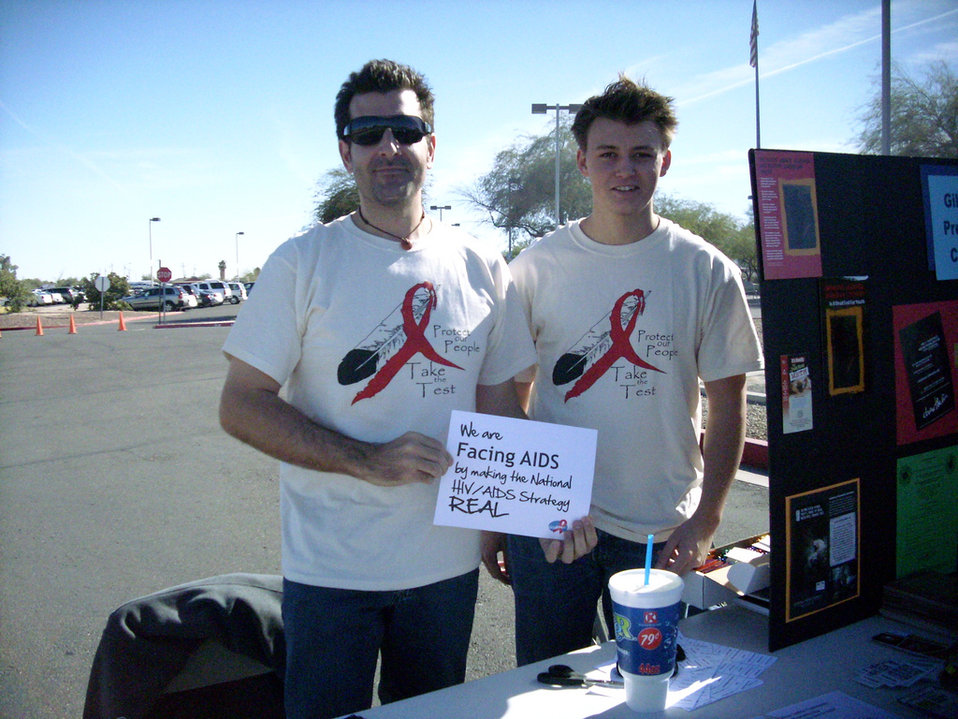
We are Facing AIDS through NHAS-33